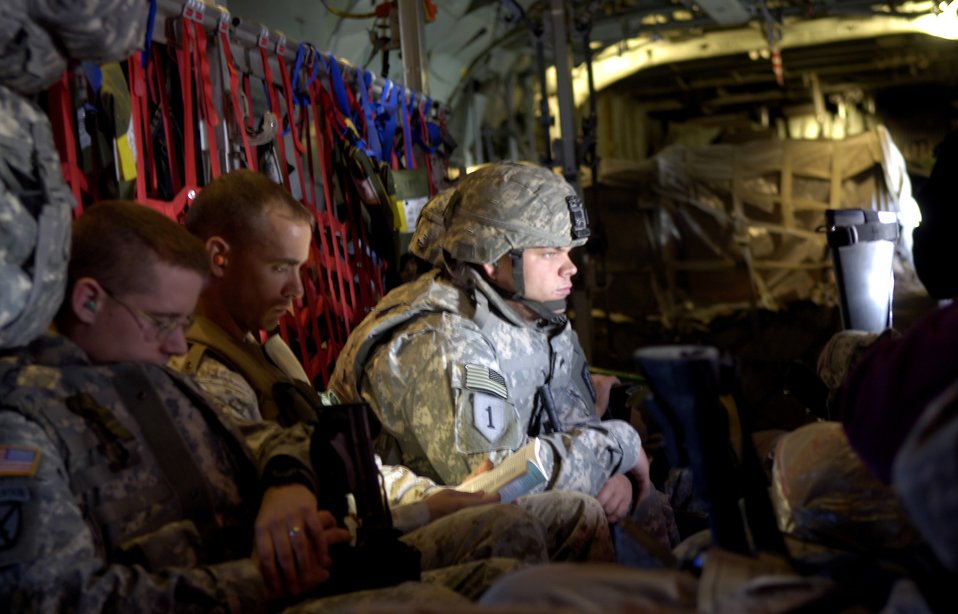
Hercules lifts off

Soldiers catch a ride on a C-130 Hercules headed to Forward Operating Base Salerno, Afghanistan, on Saturday, June 10. The 774th Expeditionary Airlift Squadron at Bagram Air Base, Afghanistan, transports troops and cargo throughout Afghanistan. It is the only U.S. C-130 squadron in Afghanistan.